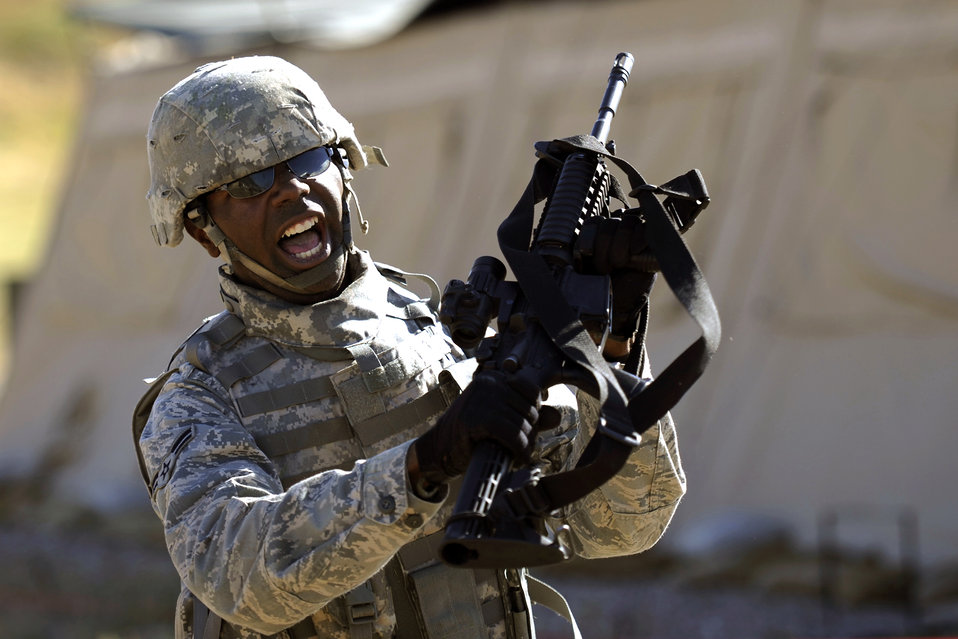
Security forces prepare for combat at Hill

A security forces Airmen with the 75th Security Forces Squadron practices during security forces combat readiness training Sept. 13, 2010, at Hill Air Force Base, Utah. The course provides Airmen with the basic skills needed to deploy to include tactical movements, land navigation and self-aid buddy care.